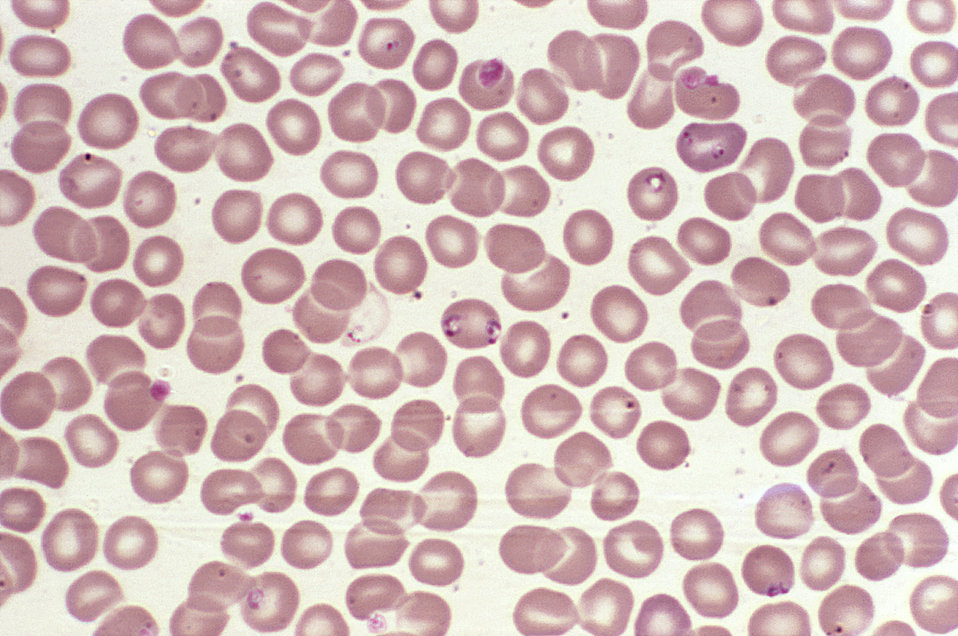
Magnified 1000X, this photomicrograph revealed the presence of what were determined to be numbers of intraerythrocytic Babesia sp. ring-form parasites.